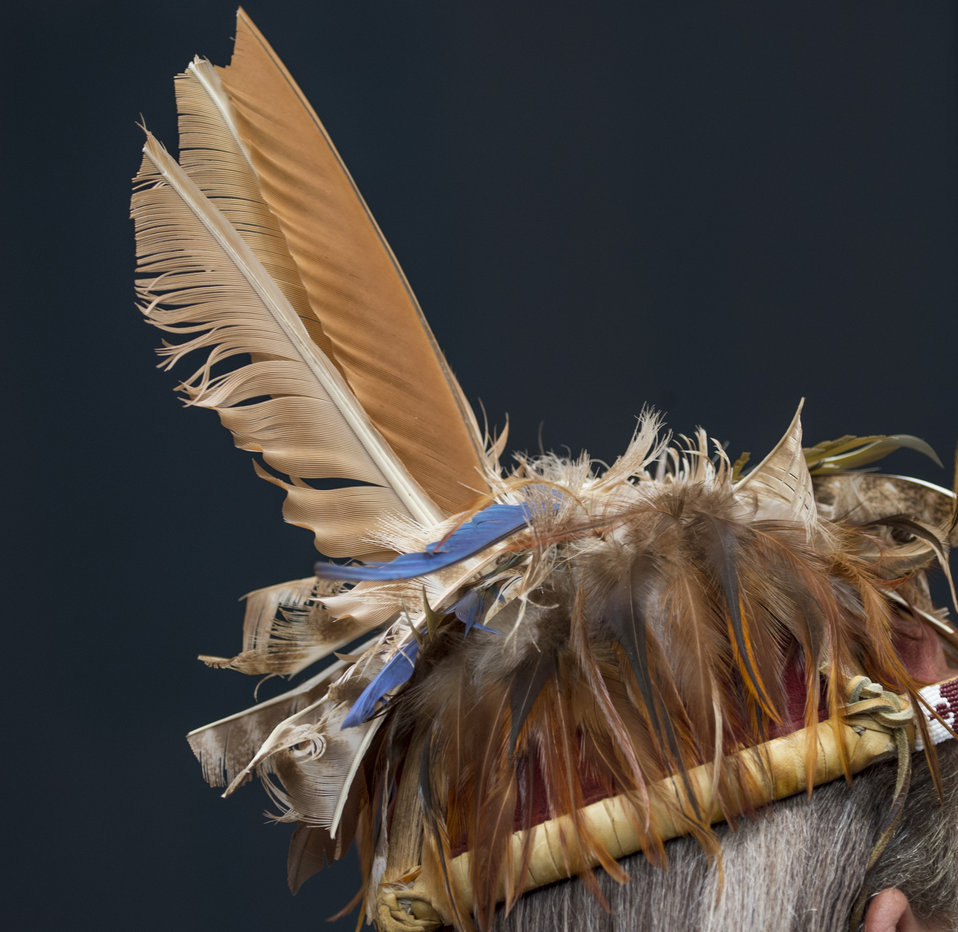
Cheroenhaka Nottoway Indian Tribe Chief Walter D. “Red Hawk” Brown III wears traditional headdress at the 2013 American Indian and Alaska Native Heritage Observance at the U.S. Department of Agriculture (USDA) on Thursday, Nov. 14, 2013 in Washington, D.C. The theme of this year’s event “Guiding Our Destiny with Heritage and Traditions.”